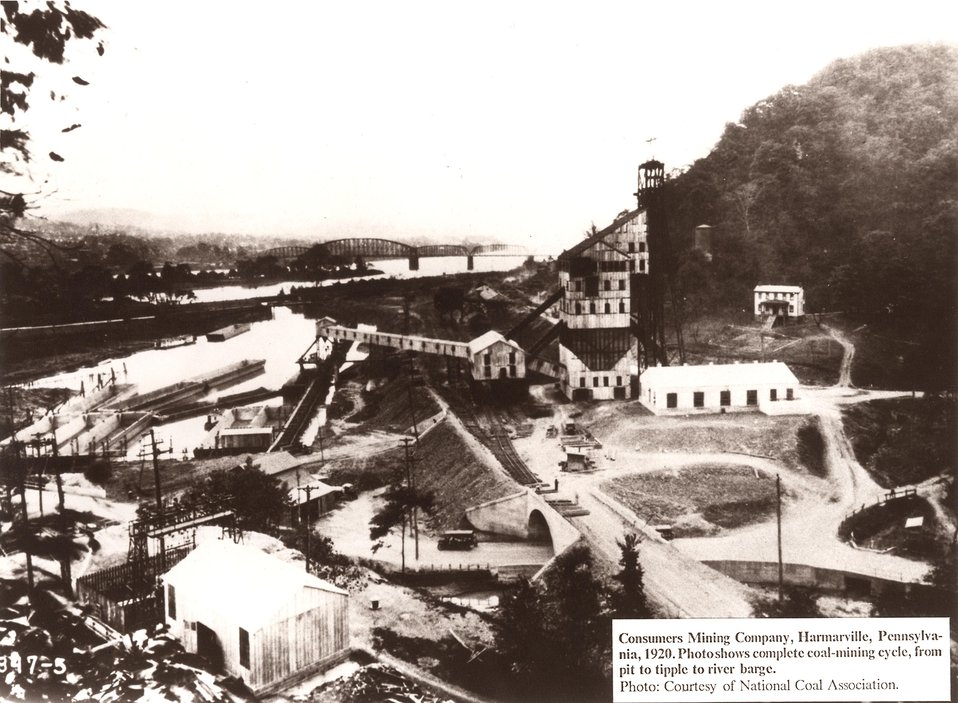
Consumer Mining Company, Harmarville, PA, 1920.